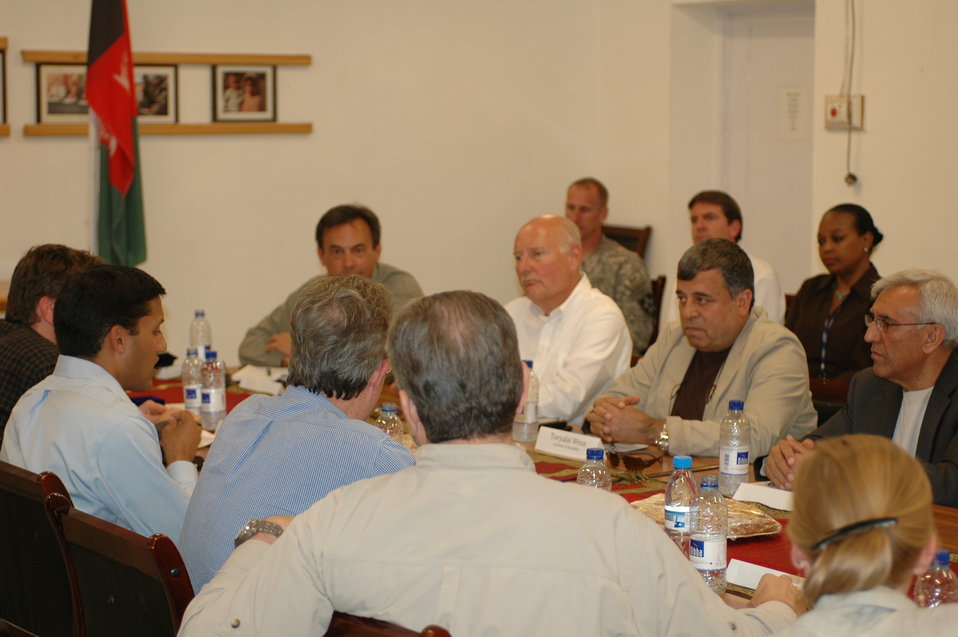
Dr Shah Visits Kandahar April 9, 2010